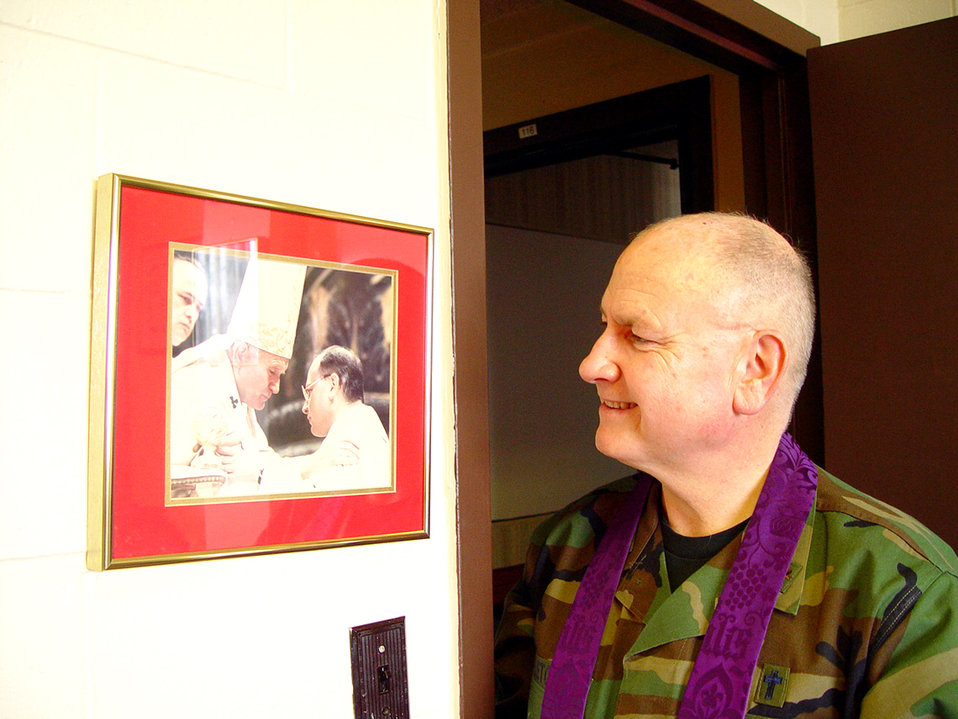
Elmendorf priest recalls experiences with pope

ELMENDORF AIR FORCE BASE, Alaska -- Chaplain (Maj.) Patrick Fletcher, a Catholic priest here, fondly recollects his personal experiences with the late Pope John Paul II. Chaplain Fletcher was ordained a priest by the pope in 1985 and joined the Air Force in 1989.